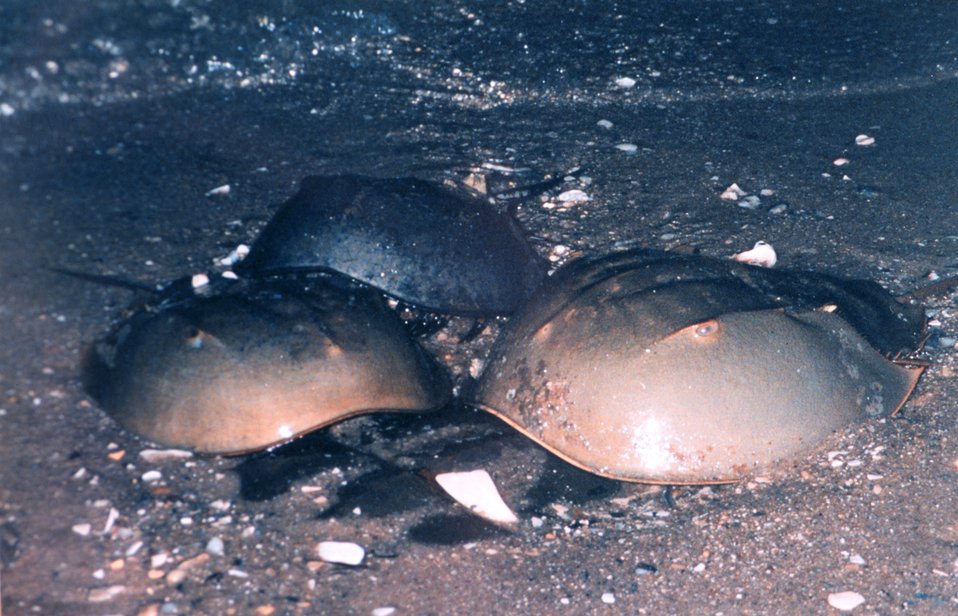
Horseshoe crabs coming into the shallows at Flag Ponds Nature Park, a unit of Montgomery County, Maryland, public schools.